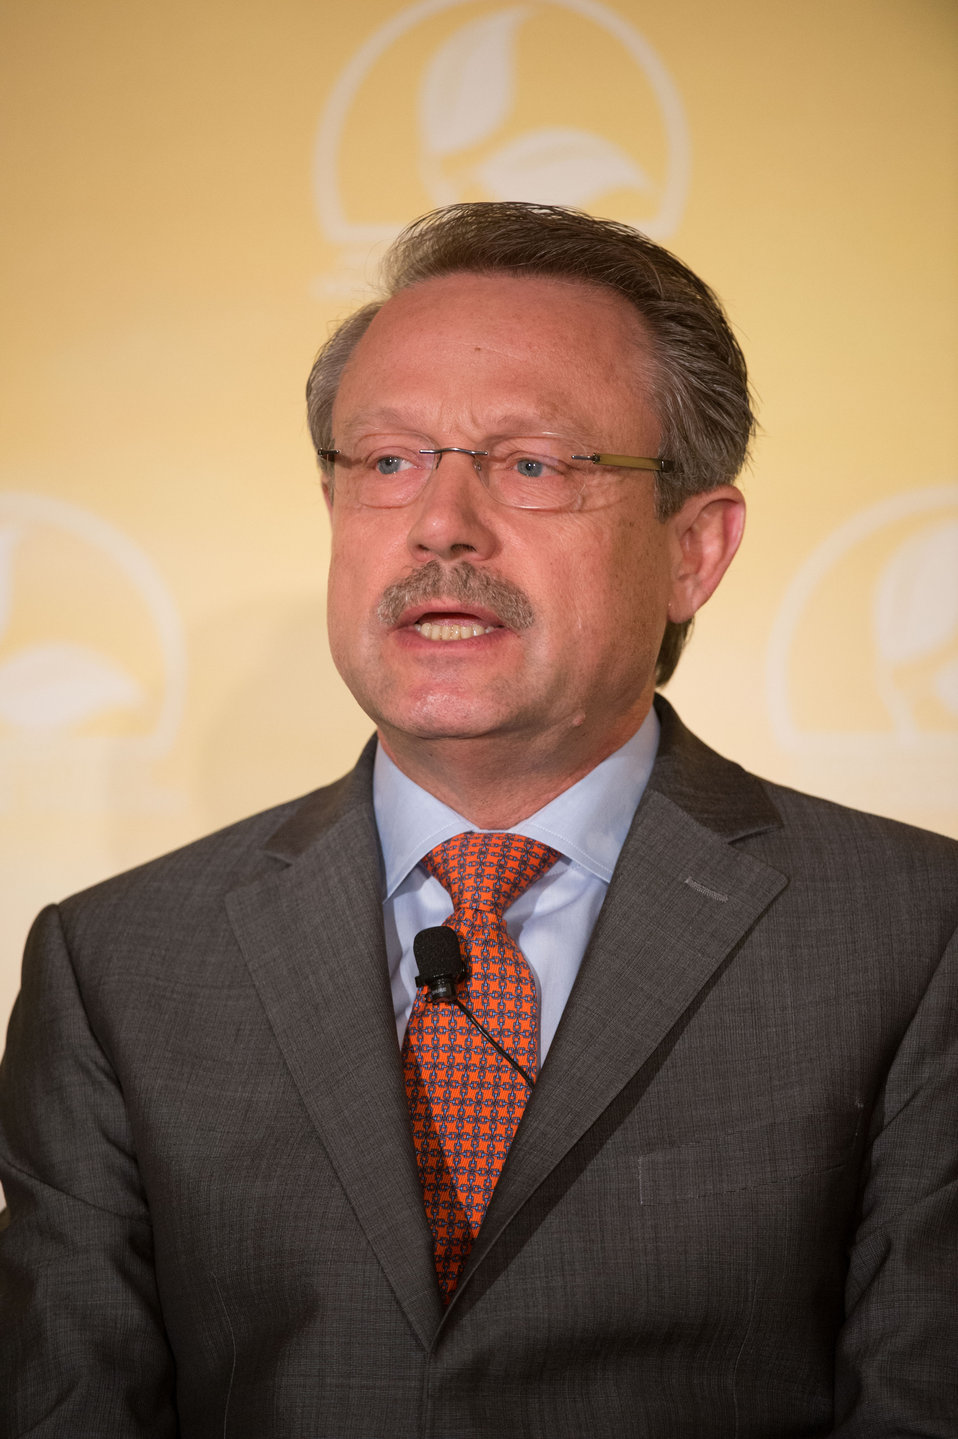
Building Markets Here and Abroad panelist DuPont Pioneer President Paul Schickler at the 2014 Agricultural Outlook Forum in Arlington, VA., on Thursday, Feb. 20, 2014. The U.S. Department of Agriculture's (USDA) annual Agricultural Outlook Forum brings together the agricultural community to discuss policy, trade, science, rural development, and the economic outlook for the coming year. The Forum also focuses on forestry, health and nutrition issues, and the changing dynamics and face of rural America.USDA photo by Bob Nichols.